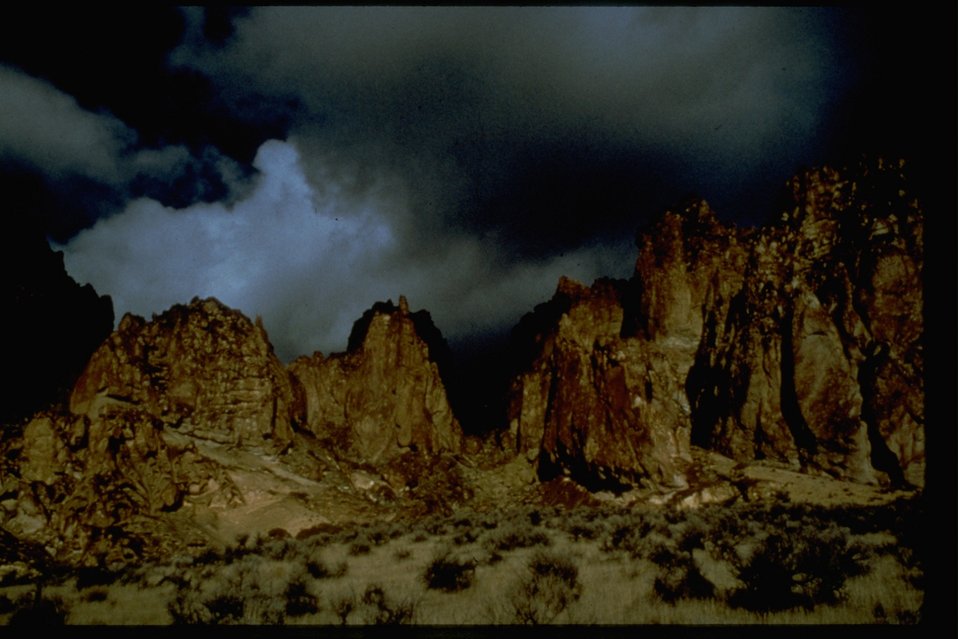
Honeycombs Wilderness Study Area. OR 3-77A.